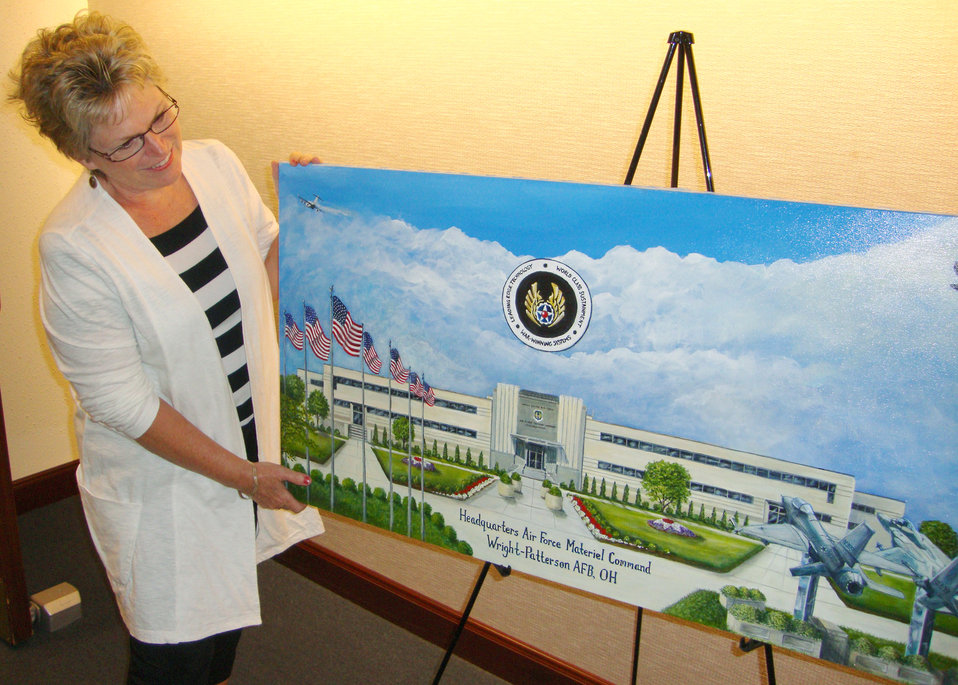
AF Art PB

Elaine Balsley packs up the canvas of her acrylic painting in late August 2010 before shipping it to the Air Force Art Program. The painting, which was on display in Building 262 before its submission to the art collection, is one of her two original works on display now at the National Museum of the U.S. Air Force. Ms. Balsley is an SAIC contractor and management analyst in the Air Force Materiel Command Logistics Directorate's Maintenance Division.